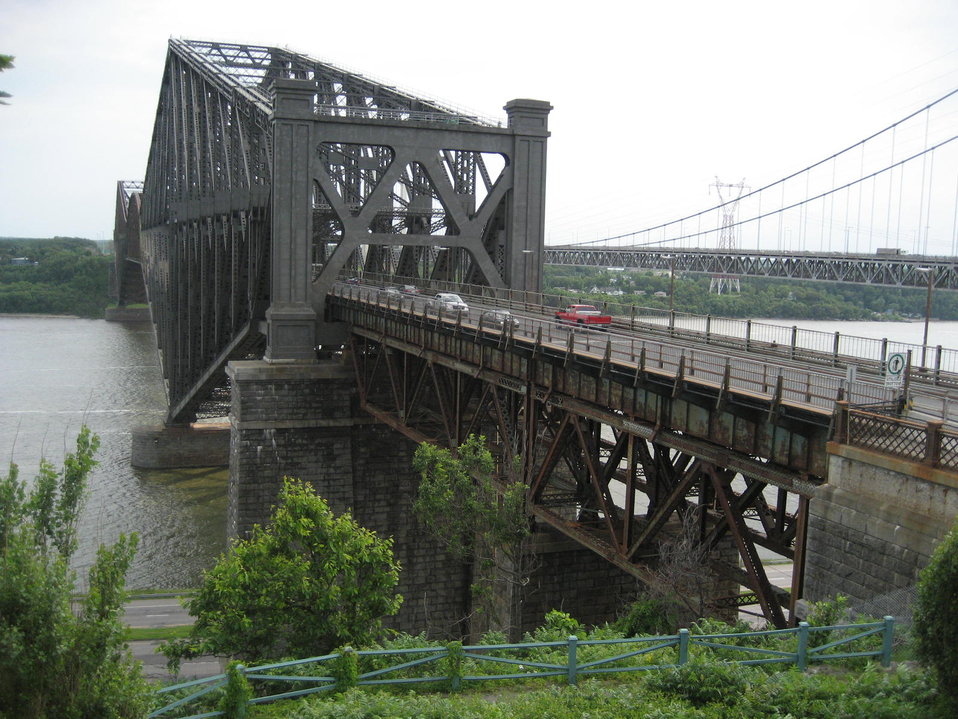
The Quebec Bridge, view from Parc Aquarium Du Quebec, Quebec City, Canada Fran√ßais†: Entr√©e nord du pont de Qu√©bec